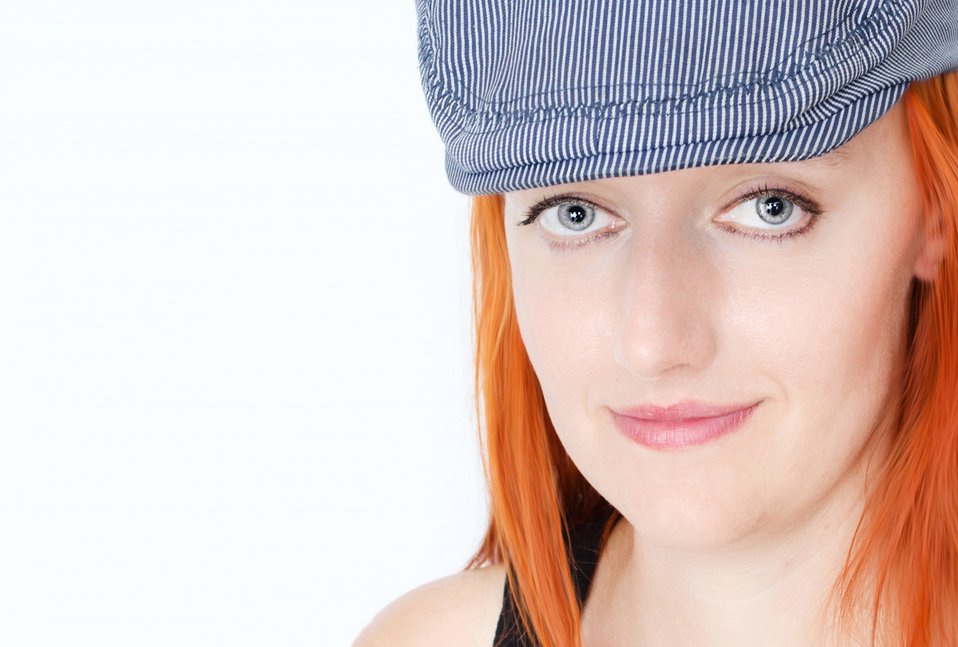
Woman - portrait.